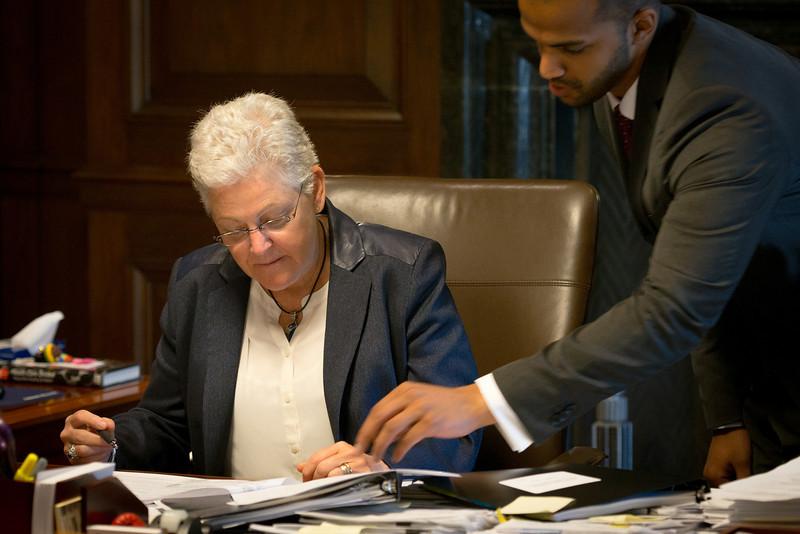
Day in the Life - June 2, 2014

9:48 am - With help from her chief speechwriter, Kevin Samy, McCarthy fine tunes her remarks minutes before she is set to speak. (4/15)